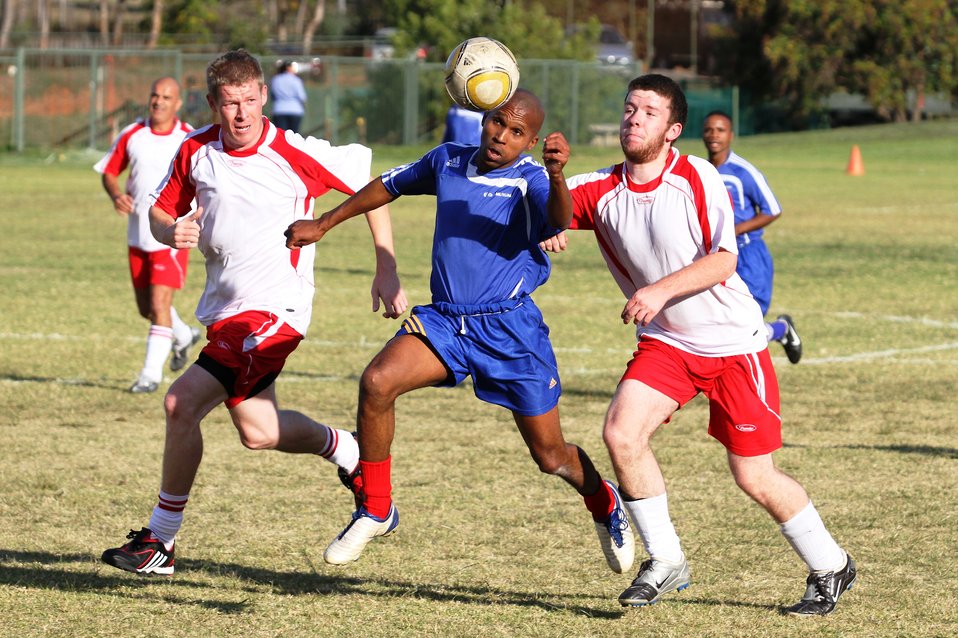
U.S. Embassy Pretoria Plays the British High Commission

The U.S. Embassy Pretoria plays the British High Commission in a match on May 28, 2010, in Pretoria, South Africa. The match was part of a series of challenge events aimed at building the friendly rivalry and excitement before the World Cup match between the U.S. National Team and the England National Team in Rustenburg, South Africa, on June 12, 2010.